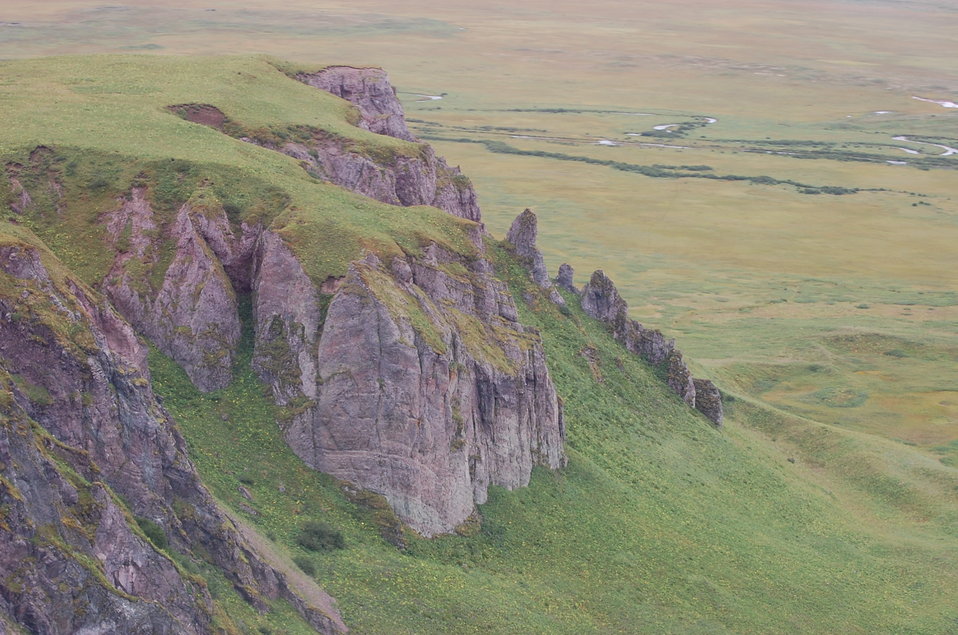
Unimak Landscapes

SE Unimak Island, Alaska Maritime National Wildlife Refuge